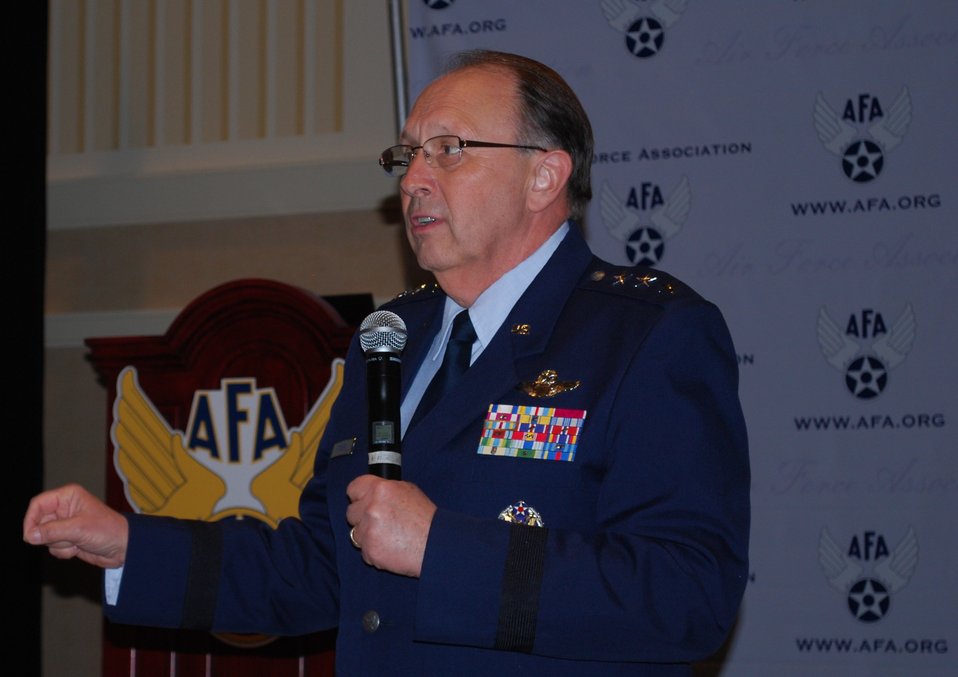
Balancing force top priority say senior Air Force leaders

Lt. Gen. Charles E. Stenner Jr., talks about how rebalancing the active and Reserve components offers an opportunity to leverage Reserve strengths and realize significant savings during his address Sept. 20, 2011, at the Air Force Association's 2011 Air & Space Conference and Technology Exposition in National Harbor, Md. More than 7,000 people attended the three-day event at the Gaylord National Resort & Convention Center. Stenner is the chief of the Air Force Reserve.